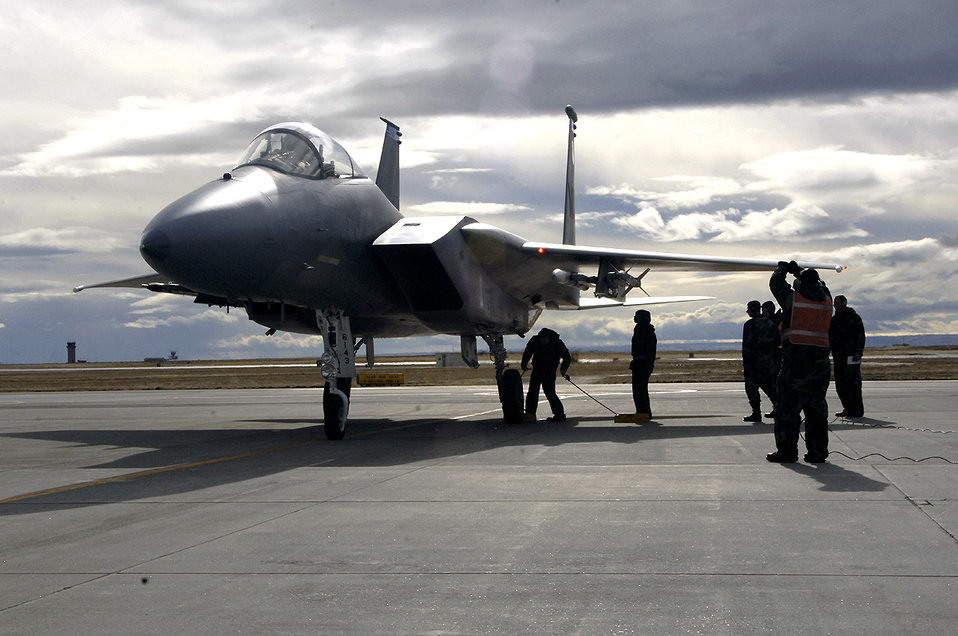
Maintainers' mission

MOUNTAIN HOME AIR FORCE BASE, Idaho (AFPN) -- End-of-runway crews with the 390th Aircraft Maintenance Unit perform recovery checks on an F-15 Eagle as part of their daily jobs on returning aircraft.